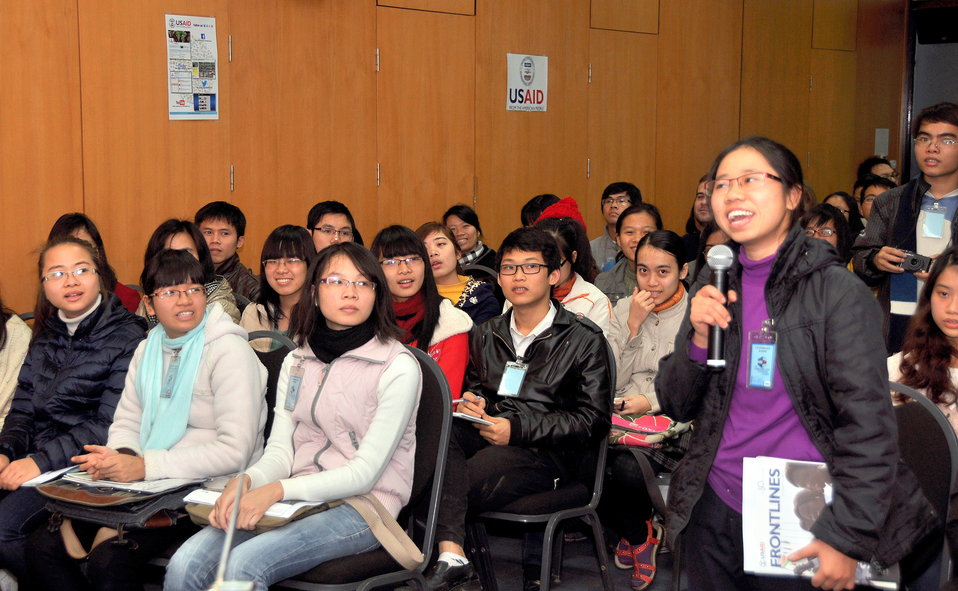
Speaker program on Climate Change and Clean Energy at the American Center

Hanoi, January 16, 2013